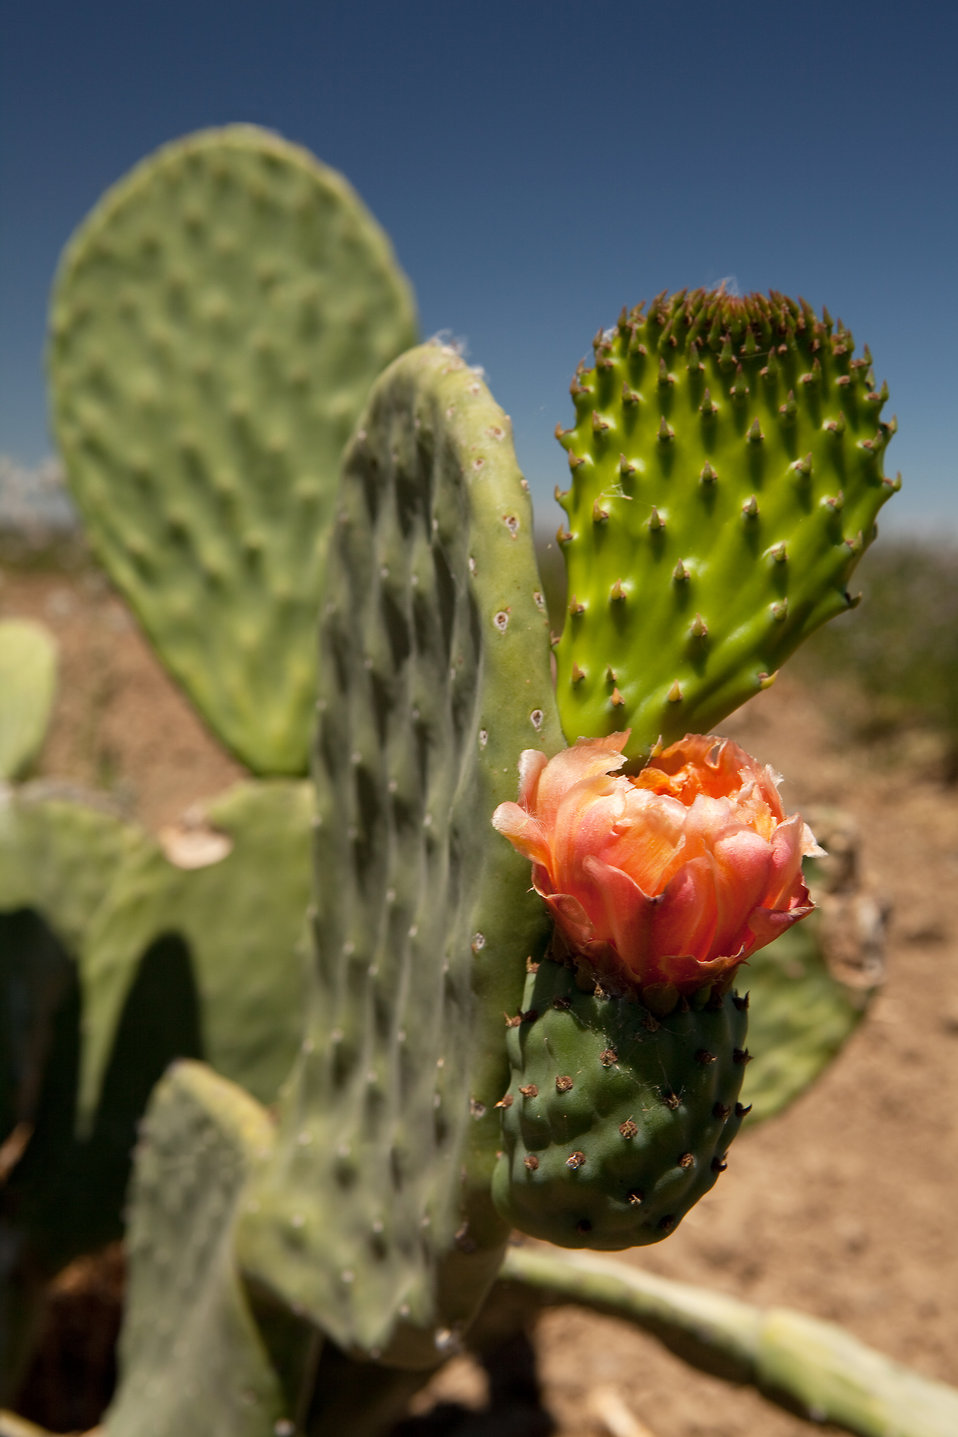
An acladode flower emerges on field-grown prickly pear cactus (Opuntia ficus-indica) on June 22, 2011.